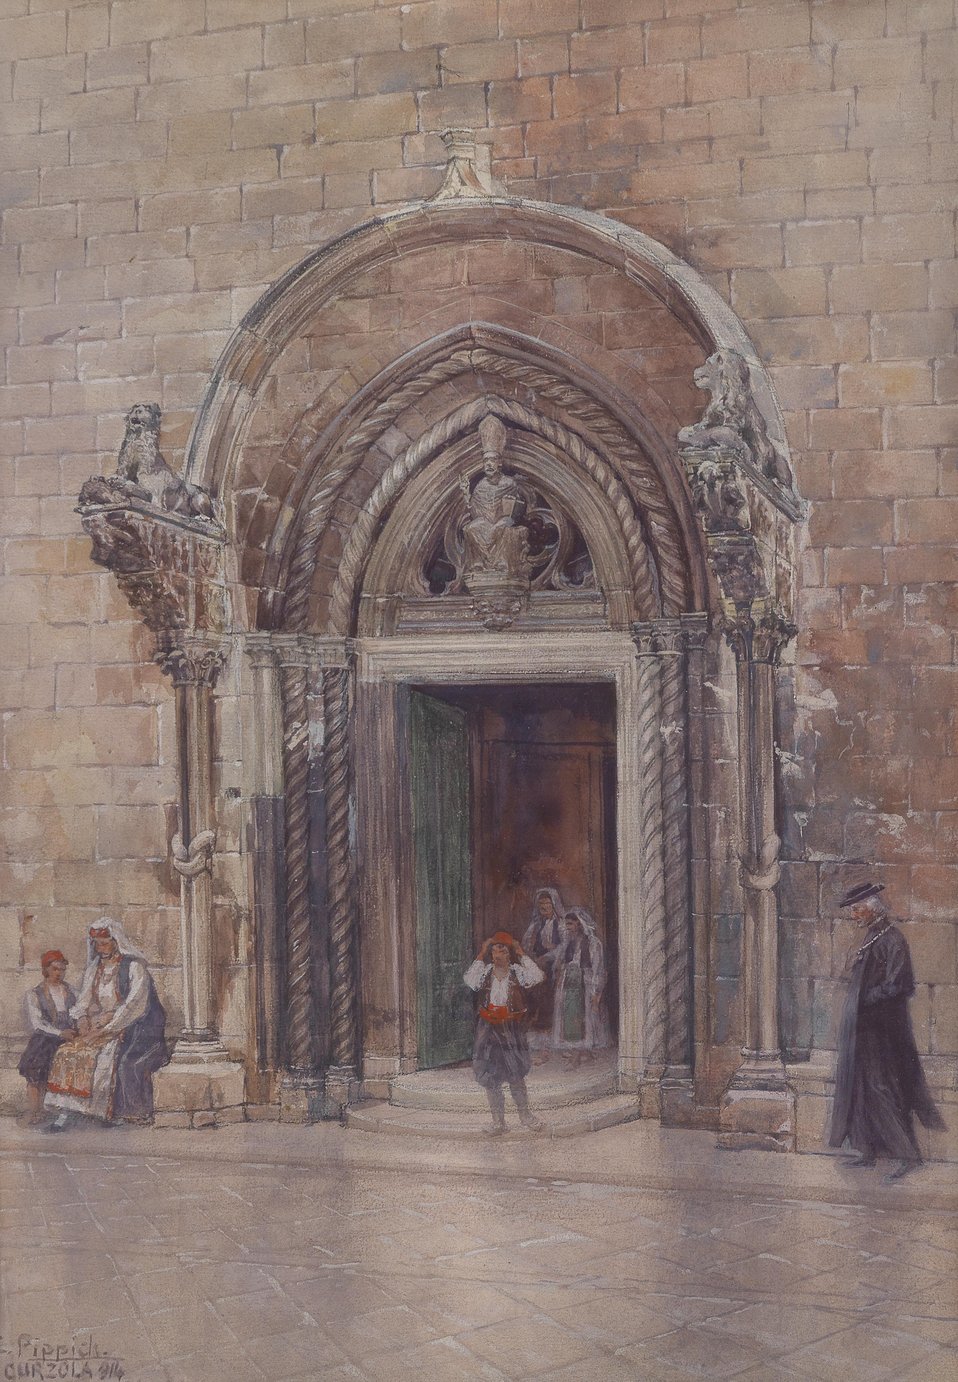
Deutsch: Eingang zum Dom von Curzola auf der gleichnamigen Insel, betitelt, signiert und datiert C. Pippich, Curzola (1)911, Aquarell auf Karton, 50 x 37 cm